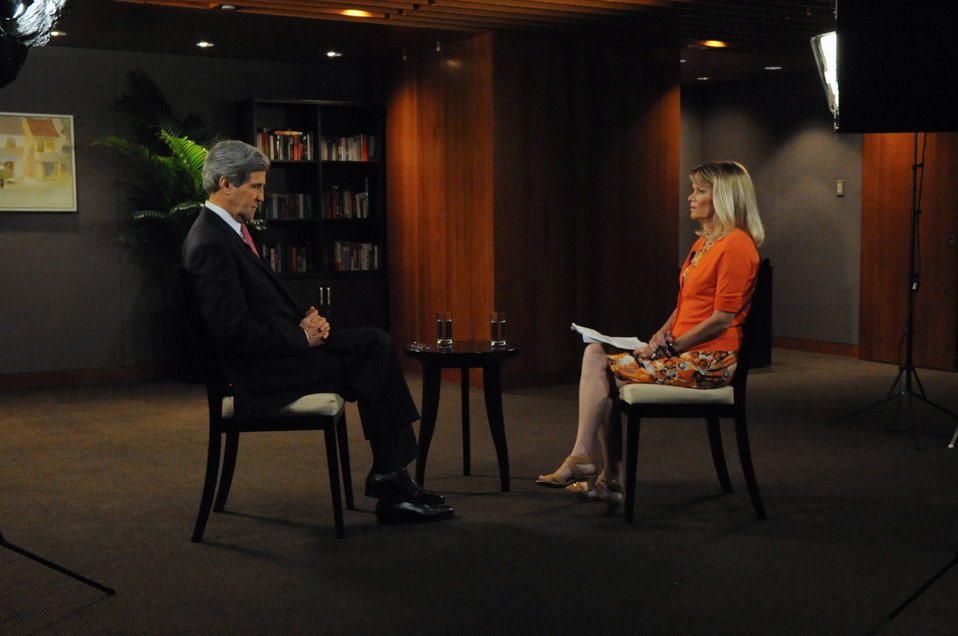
Secretary Kerry Sits For Interview With ABC's Raddatz

U.S. Secretary of State John Kerry sits down for an interview with ABC News reporter Martha Raddatz in Ho Chi Minh City, Vietnam, on December 14, 2013.